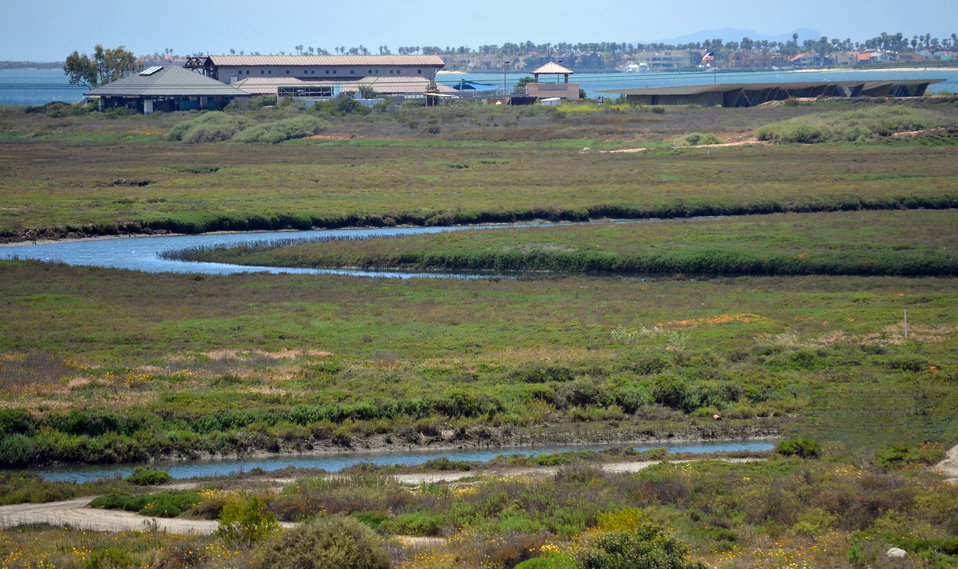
Conservation headquarters' on the Refuge

The Chula Vista Nature Center (left) and San Diego National Wildlife Refuge Complex Headquarters (lower building, right) are both situated on Gunpowder Point, a place on the Sweetwater Marsh Unit of the San Diego Bay NWR. Come visit!